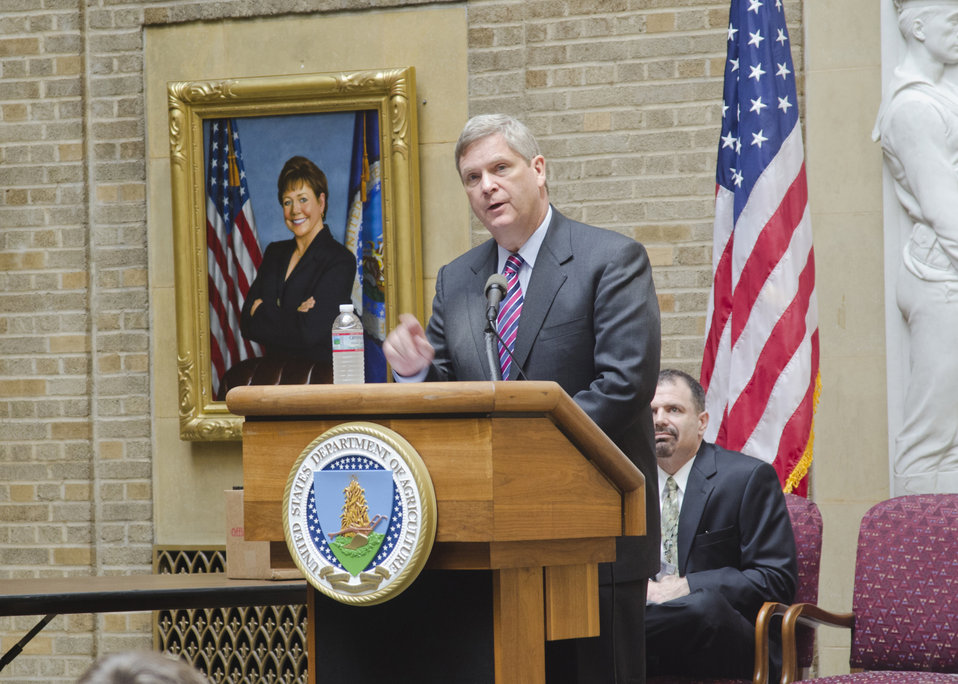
The U. S. Department of Agriculture (USDA) Unsung Heroes awards are presented to employees who have consistently provided exceptional service to the American public. Through their accomplishments, these “Unsung Heroes” demonstrate their dedication to public service and their commitment to fulfilling the mission of USDA. Agriculture Secretary Tom Vilsack speaks at the Unsung Heroes Award ceremony on Tuesday, May 3, 2011on the Whitten Building patio at the Department of Agriculture in Washington DC.